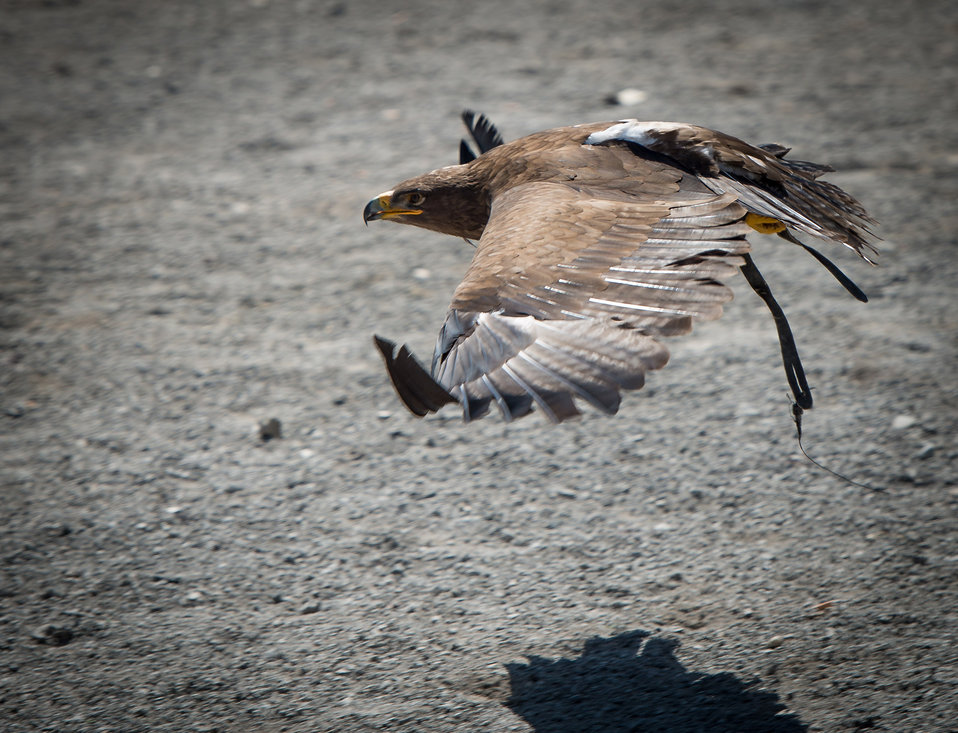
Eagle in flight

Eagle - detail.